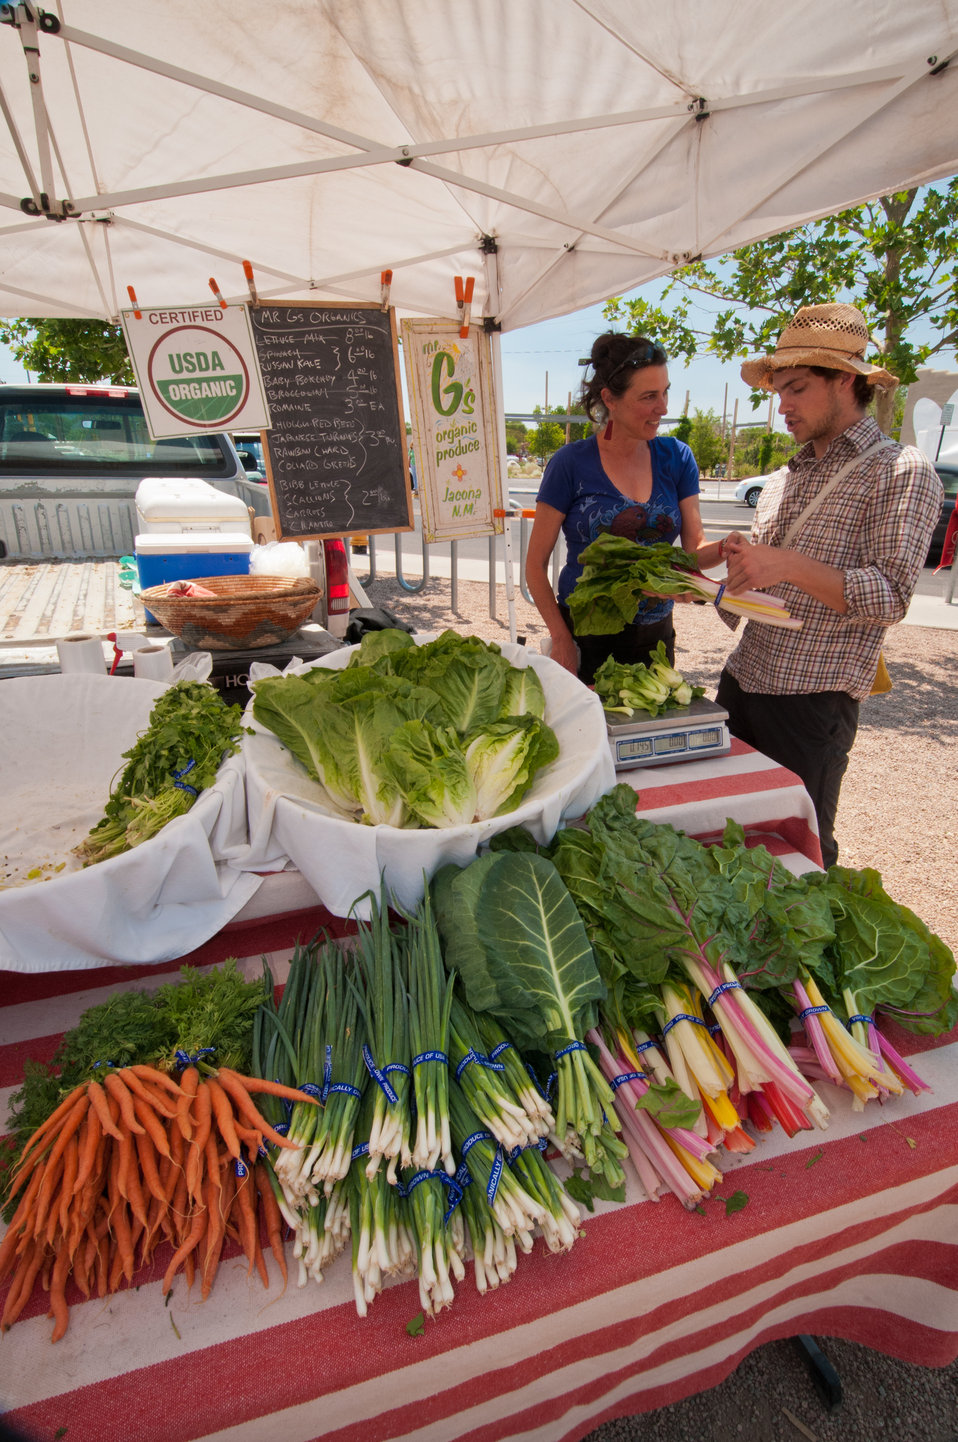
Natasya Gundersen shows Santa Fe Farmers Market On-sight Market Manager Paolo Speirn a wide variety of U.S. Department of Agriculture (USDA) certified organic produce grown at Mr. “G’s” Organic Produce in Jacona, NM. Mr. “G’s” is known for its beautiful salad mix and produces a wide variety of root crops and flowers. The Santa Fe Farmers Market is one of the oldest, largest and most successful growers’ markets in the country. Serving farmers and producers the market brings fresh food; education promotes small farms and sustainable agriculture in Northern New Mexico.